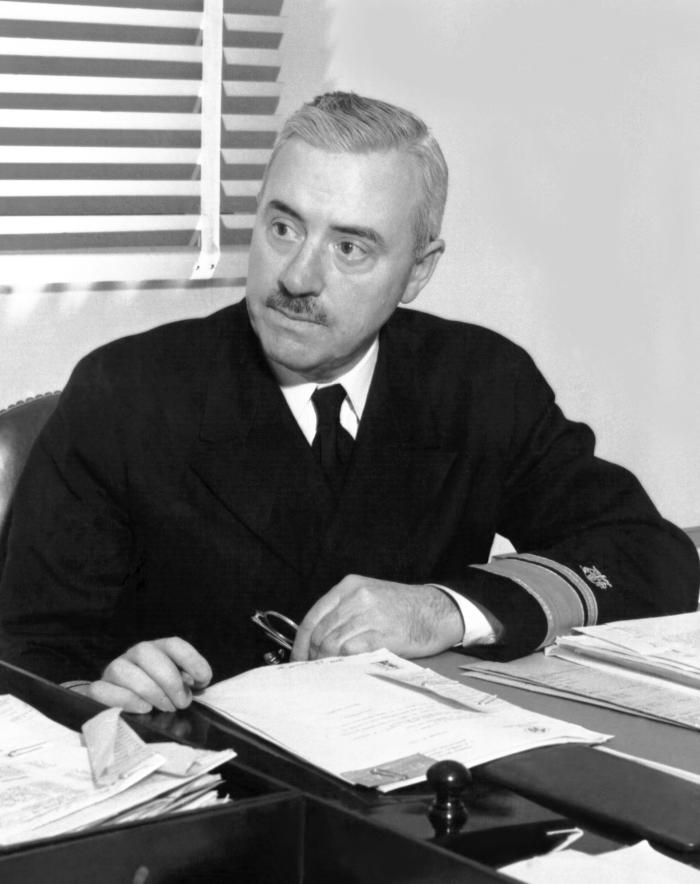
This is a photograph of Thomas Parran, Jr., M.D. Dr. Parran was the United States Surgeon General from 1936 to 1948.